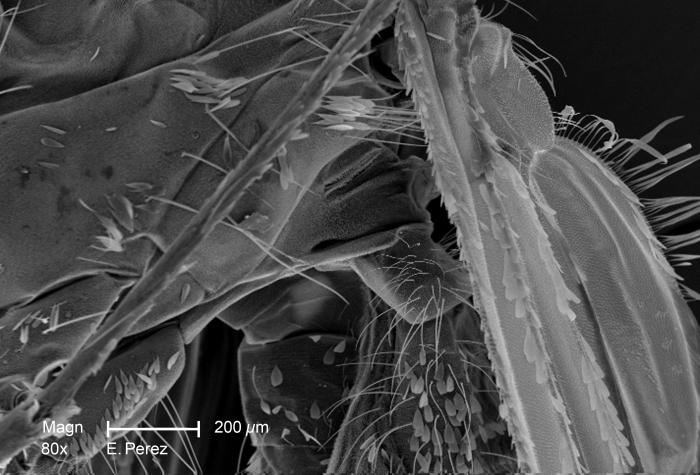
Under a slightly lower magnification than PHIL 10511, this scanning electron micrograph (SEM) revealed some of the minute exoskeletal details found on the surface of what was thought to be an unidentified mosquito discovered in the suburbs of Decatur, Georgia. In this particular view portions of the thoracic and abdominal regions are made visible with this insect's left wing in the foreground, emanting from its thoracic region. As a member of the Phylum Arthropoda, i.e., Arthro = 'jointed', and poda 'leg', this insect is supported by a jointed exoskeleton, thereby, facilitating mobility of all of its body parts.